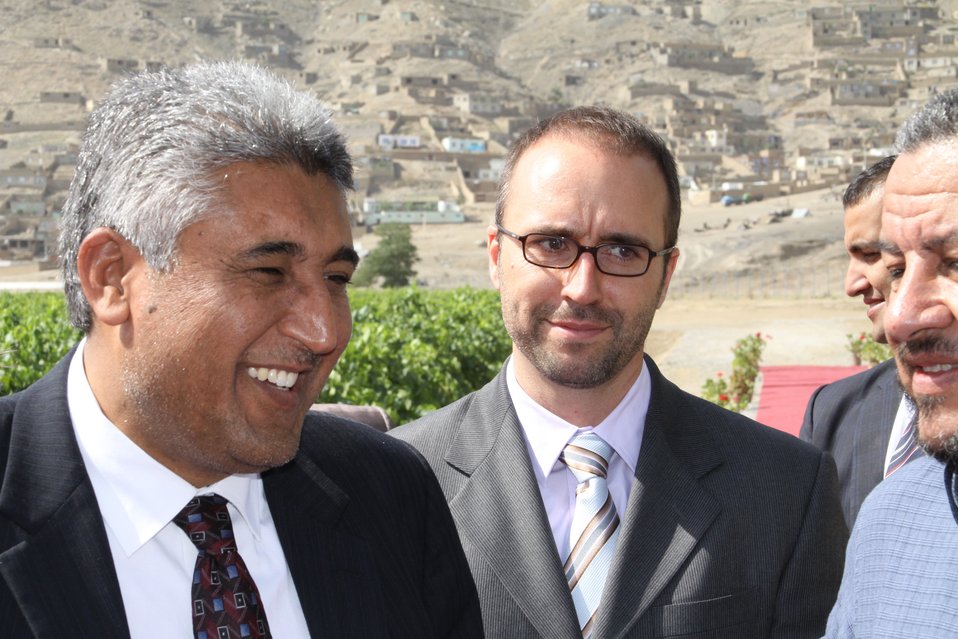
Badam Bagh Farm